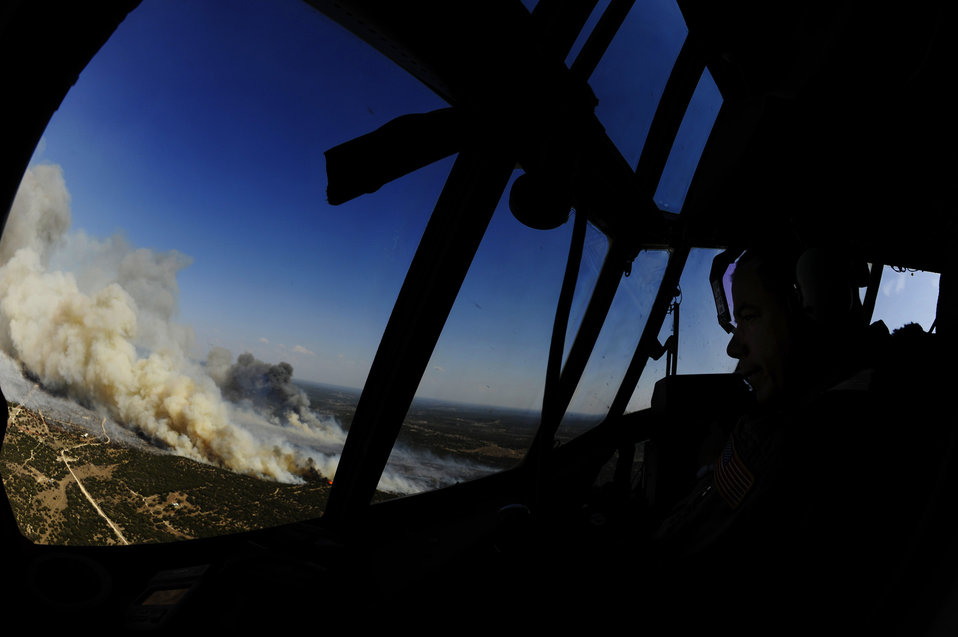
Texas Wildfires

Lt. Col. Greg Ervin surveys the Oasis wildfire as his crew prepares to dispense fire retardant April 26, 2011, during firefighting efforts in west Texas. Lt. Col. Ervin is a C-130 Hercules pilot with the California Air National Guard’s 146th Airlift Wing. His C-130 is equipped with a Modular Airborne Firefighting System installed to dispense the fire retardant.